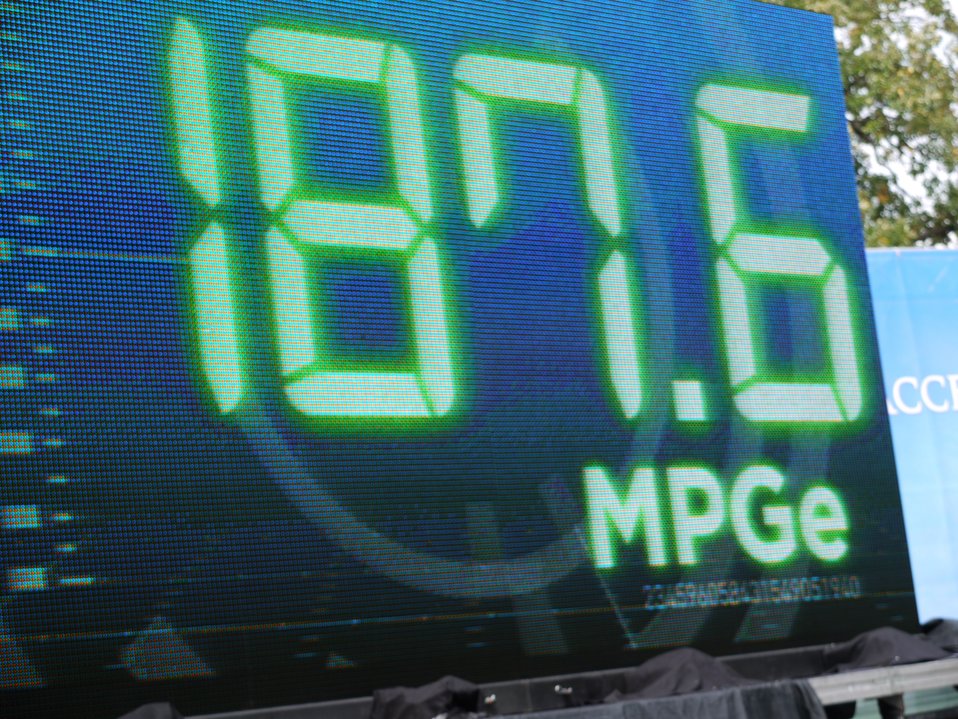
ProgressiveXPrizeEvent September 16 2010 Peraves 187mpg